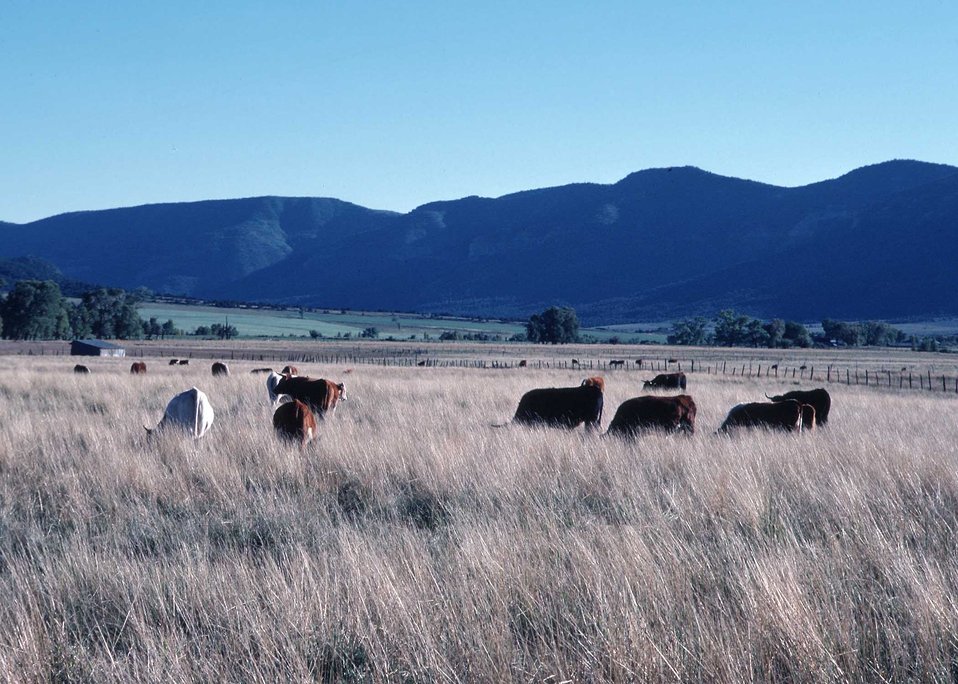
Cattle graze on healthy rangeland.